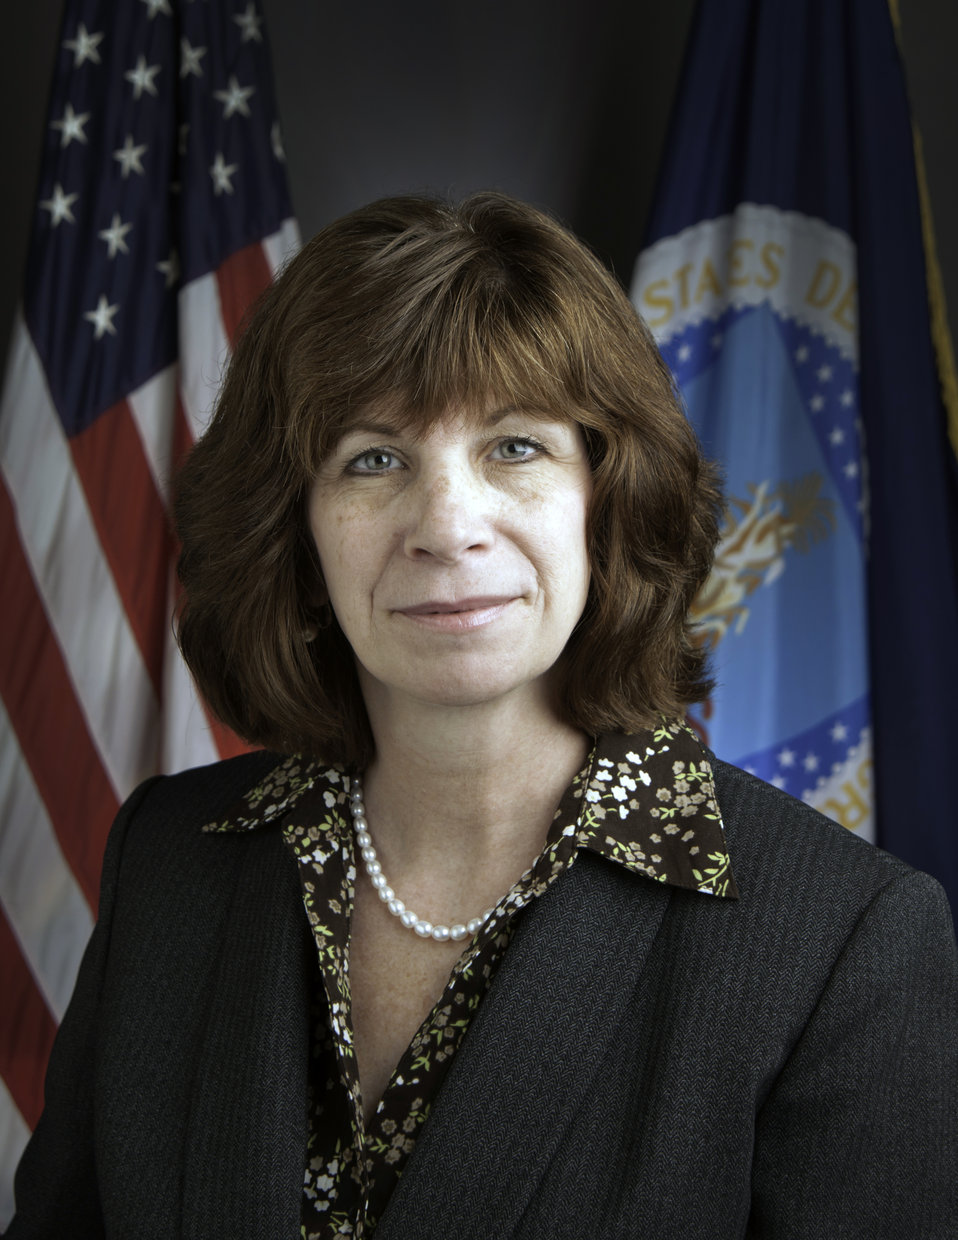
20120411-NIFA-RBN-4379 Agriculture’s National Institute of Food and Agriculture, Institute of Youth, Family and Community Assistant Director (Acting) Caroline Crocoll, Ph.D.

Agriculture’s National Institute of Food and Agriculture, Institute of Youth, Family and Community Assistant Director (Acting) Caroline Crocoll, Ph.D.